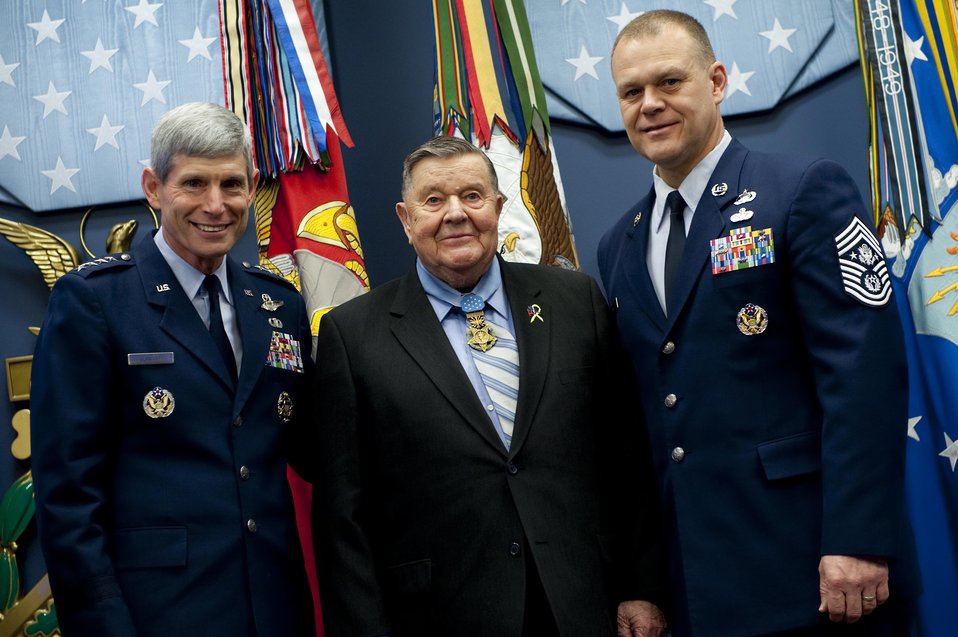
150th anniversary of the Medal of Honor

Air Force Chief of Staff Gen. Norton Schwartz, Medal of Honor recipient retired Col. Joe Jackson and Chief Master Sgt. of the Air Force James A. Roy visit March 25, 2011, prior to a ceremony honoring the 150th anniversary of the Medal of Honor in the Hall of Heroes at the Pentagon in Washington, D.C.